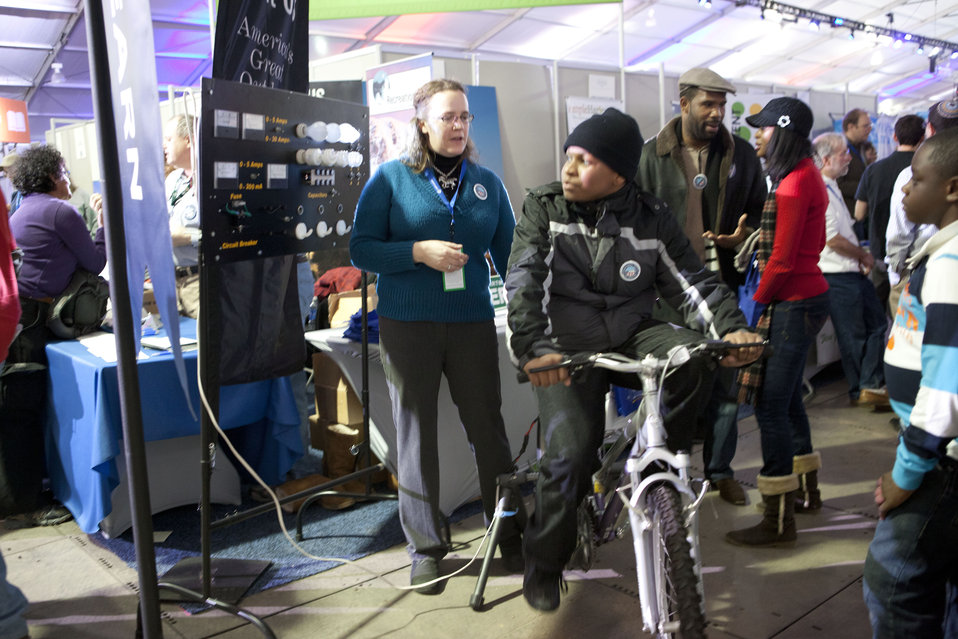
What's your #energypledge?